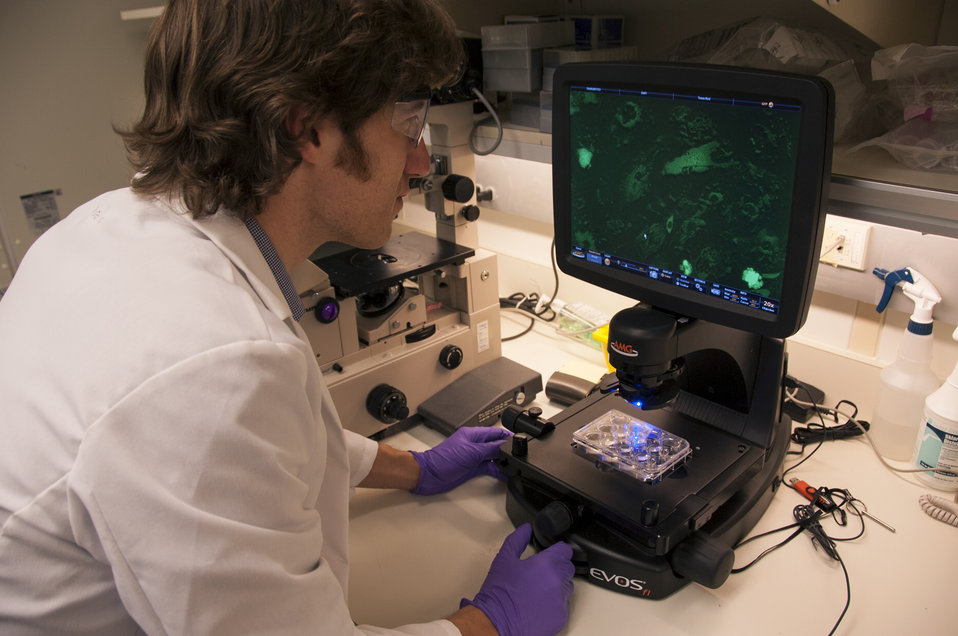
Stem Cell Research (0393)

Ross Marklein, Ph.D., a post-doctoral research fellow at FDA, examines images of stem cells in an FDA laboratory on the National Institutes of Health campus in Bethesda, Md.

To learn more about stem cell research, read this FDA Consumer Update:

Adult Stem Cell Research Shows Promise

This photo is free of all copyright restrictions and available for use and redistribution without permission. Credit to the U.S. Food and Drug Administration is appreciated but not required.

Privacy and use information: www.flickr.com/people/fdaphotos/